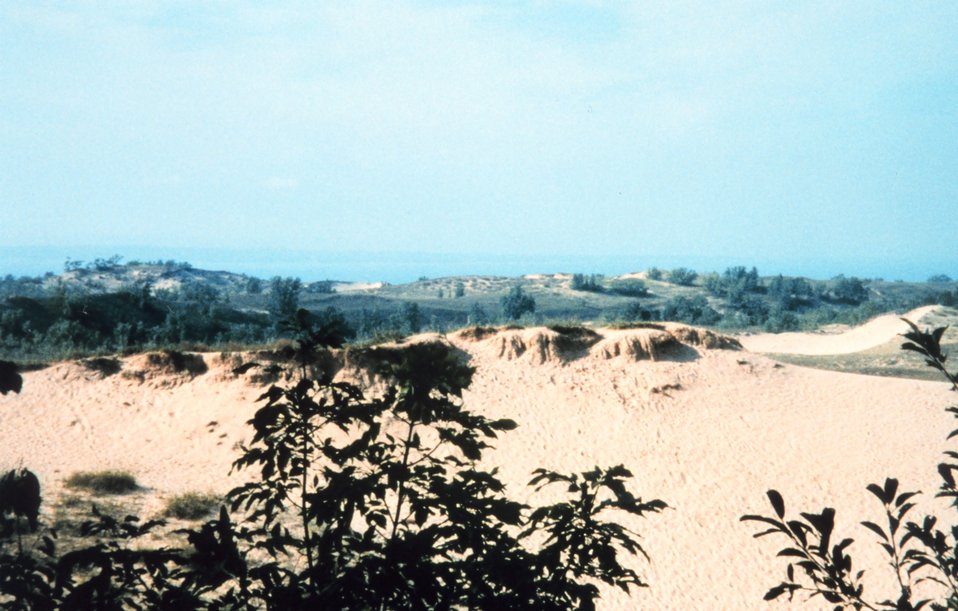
West of Traverse City, Michigan